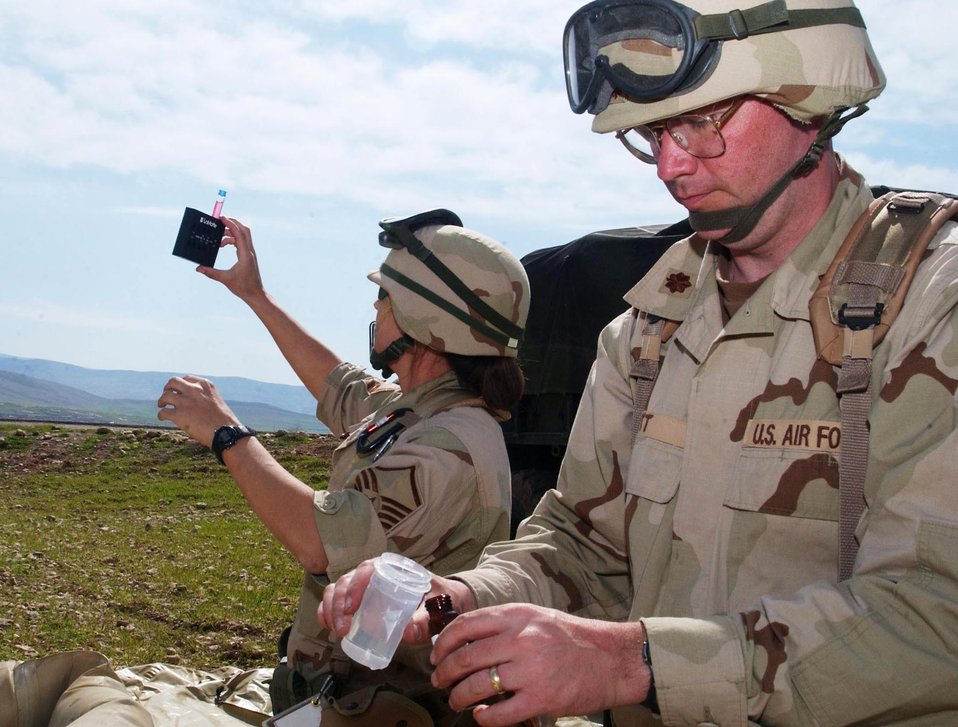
Water sample

OPERATION IRAQI FREEDOM -- Master Sgt. Mindy Patrick (left) and Maj. Darrin Ott, of the 86th Expeditionary Contingency Response Group environmental medicine flight, take water samples for testing from a reverse osmosis treatment operation near an airfield in Northern Iraq on April 1. Based at Ramstein Air Base, Germany, the unit's mission is to secure and prepare an airfield for flight operations.